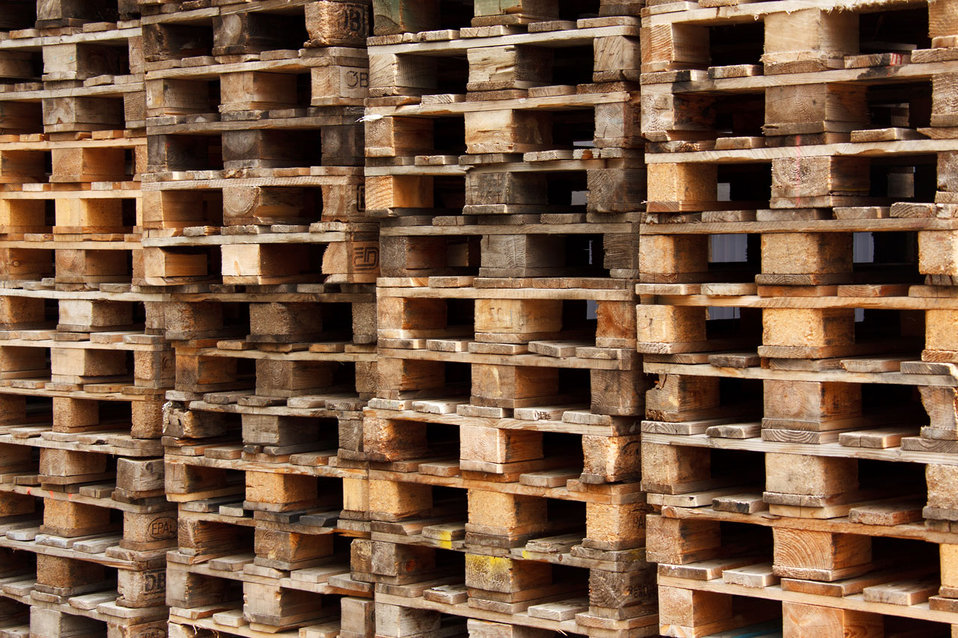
Stacked pallets

A stack of wooden pallets.